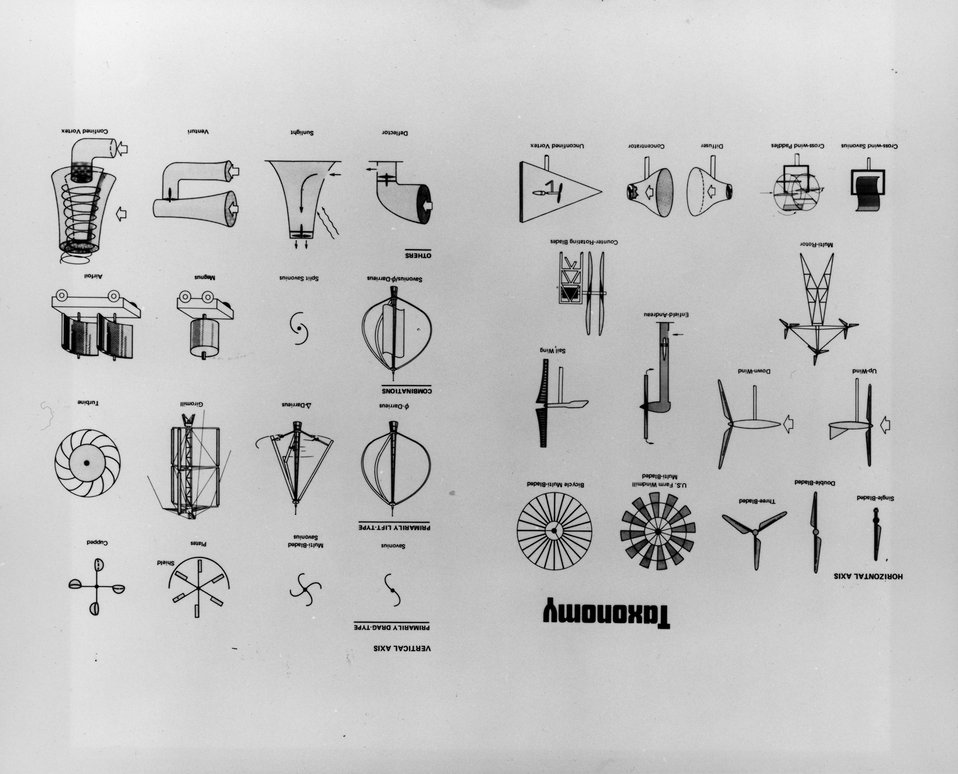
Over the years, many different configurations have been devised for the purpose of obtaining useful power from the wind. c. 1977